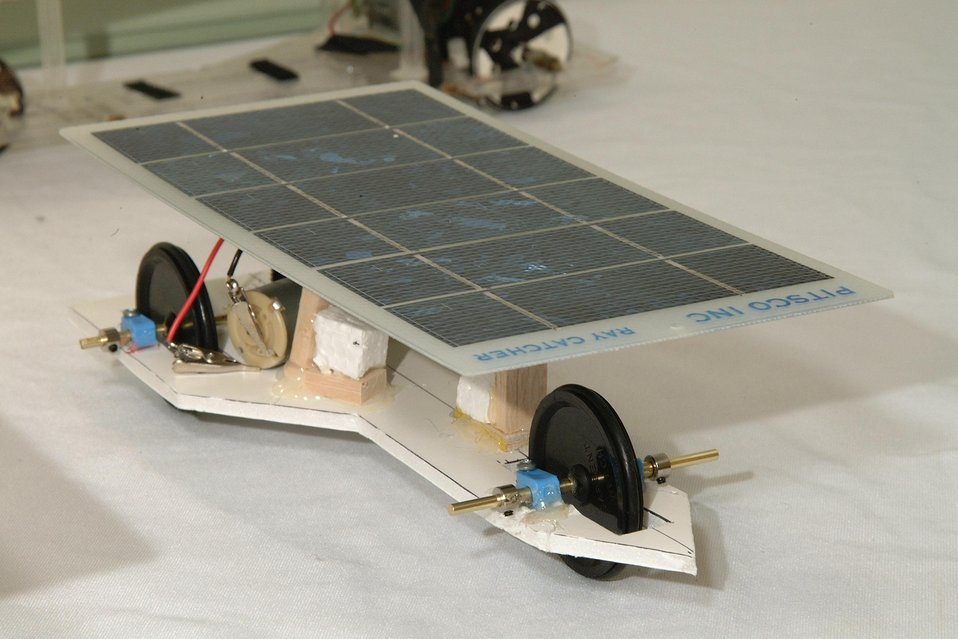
A MODEL SOLAR CAR BUILT BY STUDENT PARTICIPANTS IN THE NATIONAL MIDDLE SCHOOL SCIENCE BOWL.

THE DEPARTMENT OF ENERGY SPONSORED THE FIRST NATIONAL MIDDLE SCHOOL SCIENCE BOWL ON MARCH 21-24, 2002 IN WASHINGTON, DC AT DOE HEADQUARTERS FORRESTAL BUILDING. ON MARCH 23RD THE COMPETITION INCLUDED A MODEL SOLAR CAR RACE HELD AT THE NATIONAL 4-H CONFERENCE CENTER, CHEVY CHASE, MD. THE MODEL CARS WERE DESIGNED AND CONSTRUCTED BY THE TEAM MEMBERS.